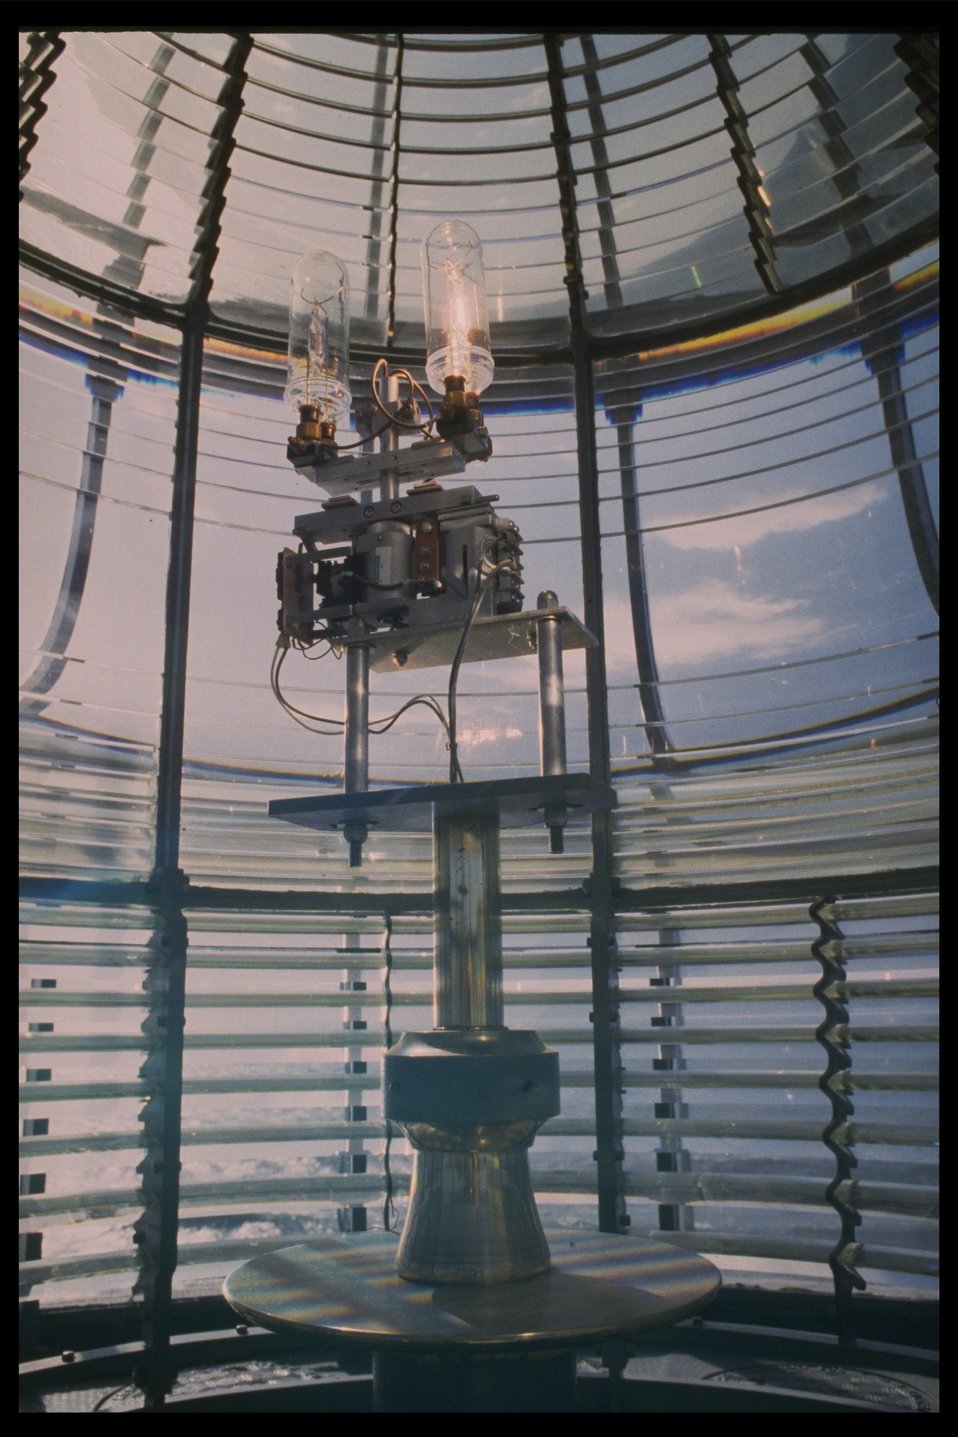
The lightbulb (1000 watt lens) on the interior of the Yaquina Head lighthouse.